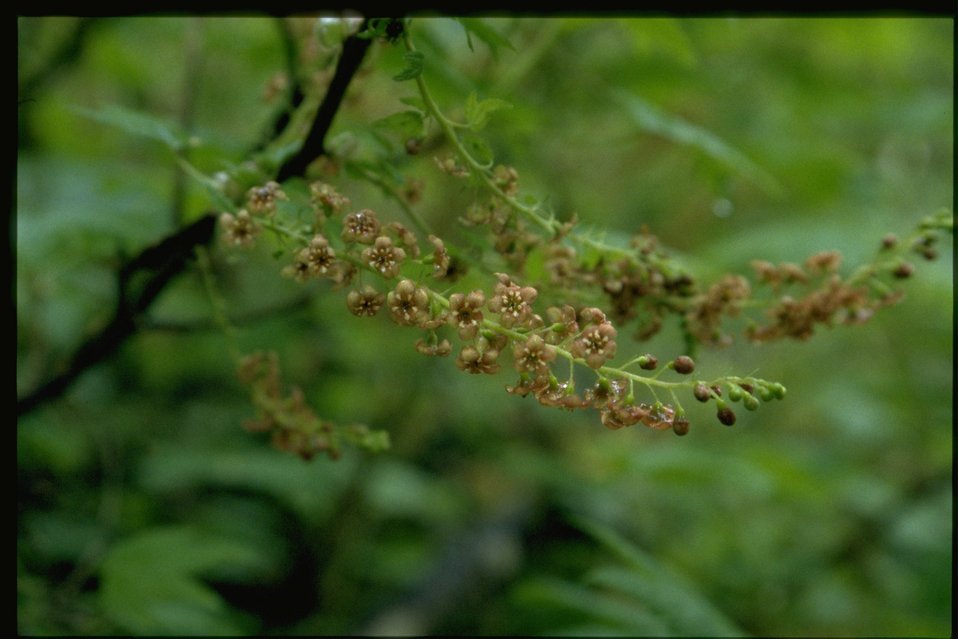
Medium shot of Stink Currant (Ribes bracteosum).